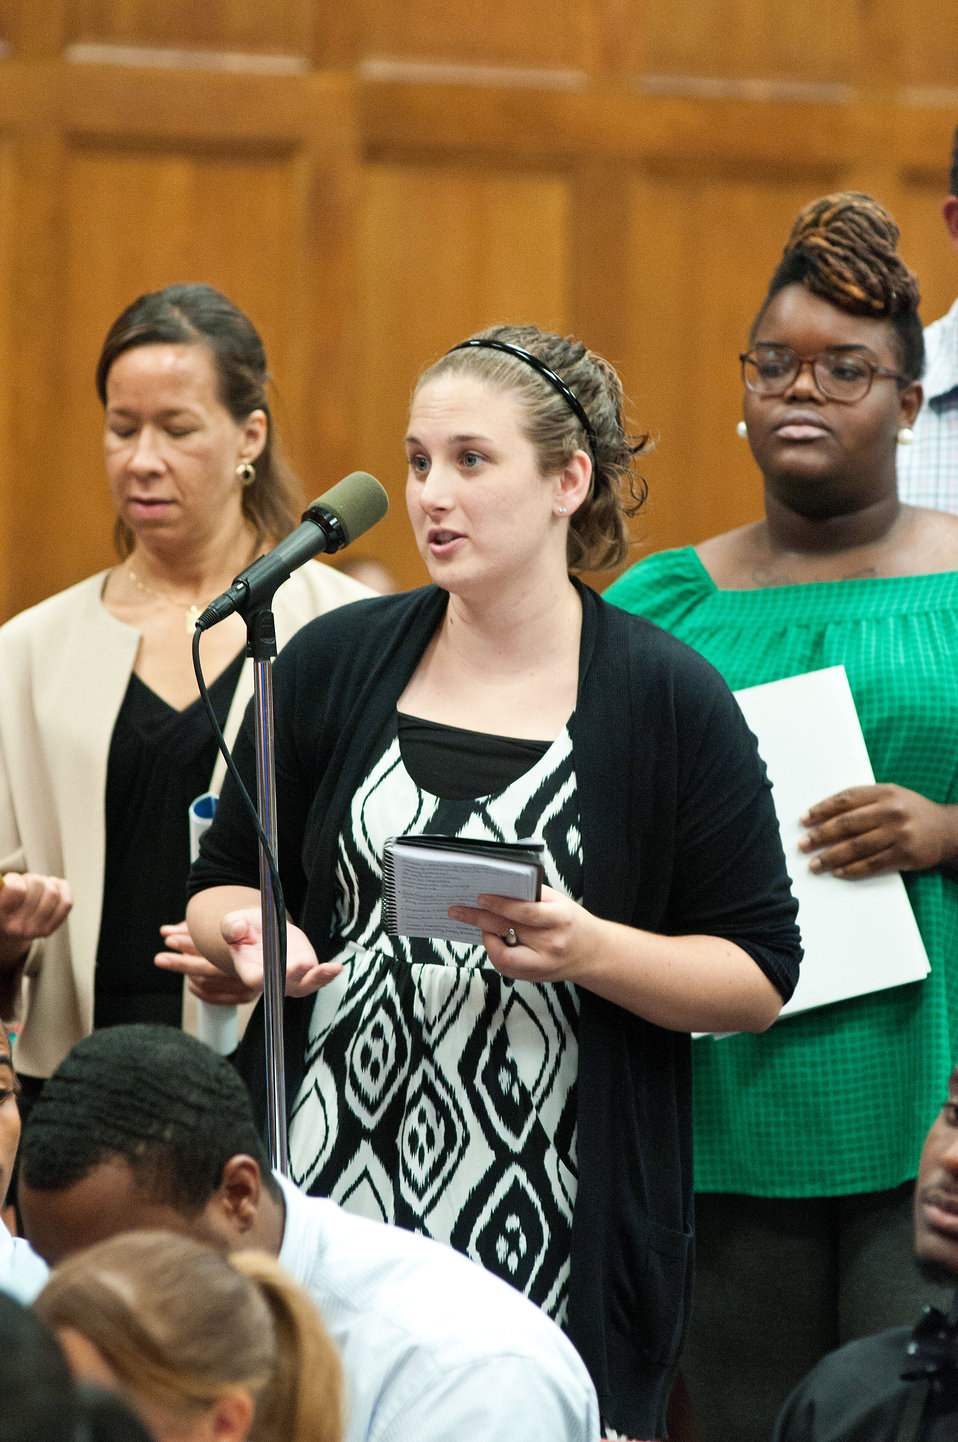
Kristen Knight, University of Illinois Veterinary Medical School and United States Department of Agriculture (USDA) intern was one of many audience members afforded an opportunity to ask questions of a panel of interns about their experience at USDA, during the Intern Day and Panel Discussion, “Transforming USDA’S Tomorrow Today” in Washington, D.C., on Wednesday, July 11, 2012.